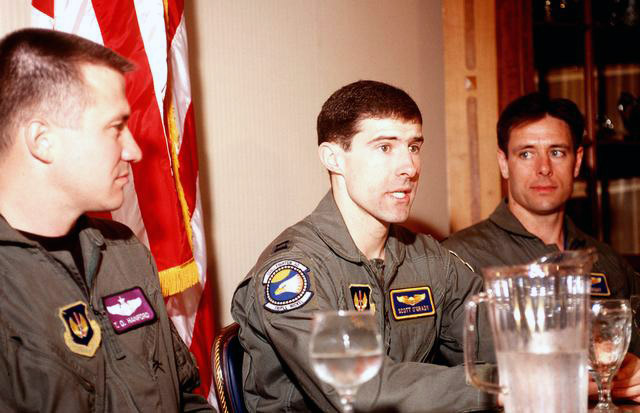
Air war over Bosnia

Capt. Scott O'Grady talks to Airmen from the 31st Fighter Wing at Aviano Air Base, Italy, about his experience after evading capture in 1995. Capt. O'Grady, with the 555th Fighter Squadron at Aviano, ejected from his F-16 over Bosnia, after his aircraft was hit by a rocket from the Bosnian Serb Army. He eluded capture by Serbian forces for five days before being picked up by a U.S. Marine Corps rescue helicopter.